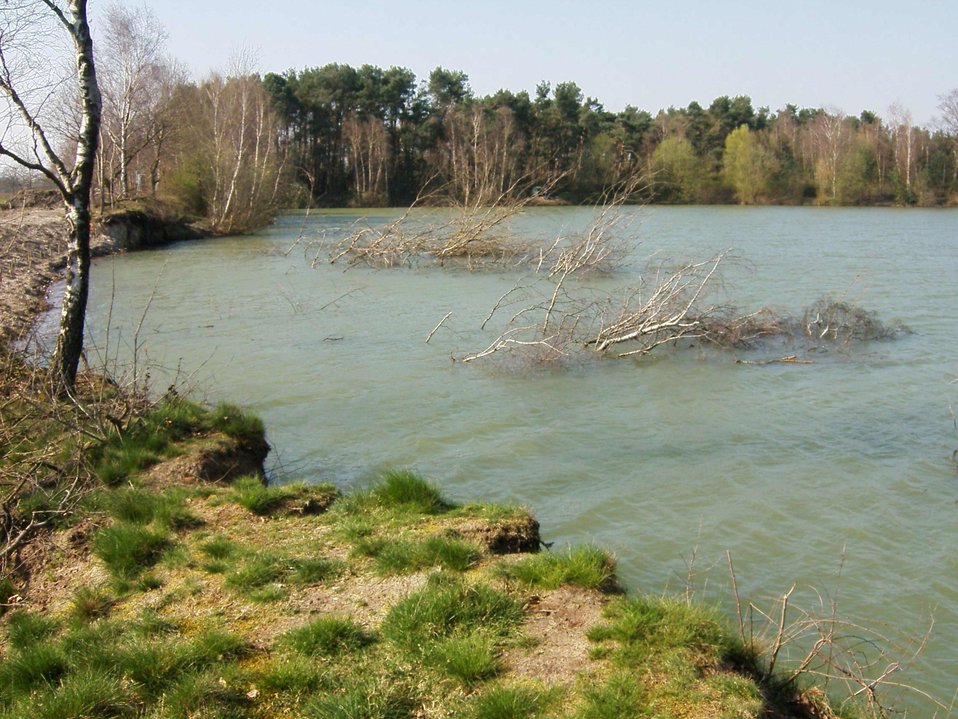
Deutsch: Uferabbruch, einige Äste abgerutschter Birken ragen noch aus dem Wasser. Hollich, Burgsteinfurt, Blick Richtung Norden, Westufer südlicher Grafensteiner See